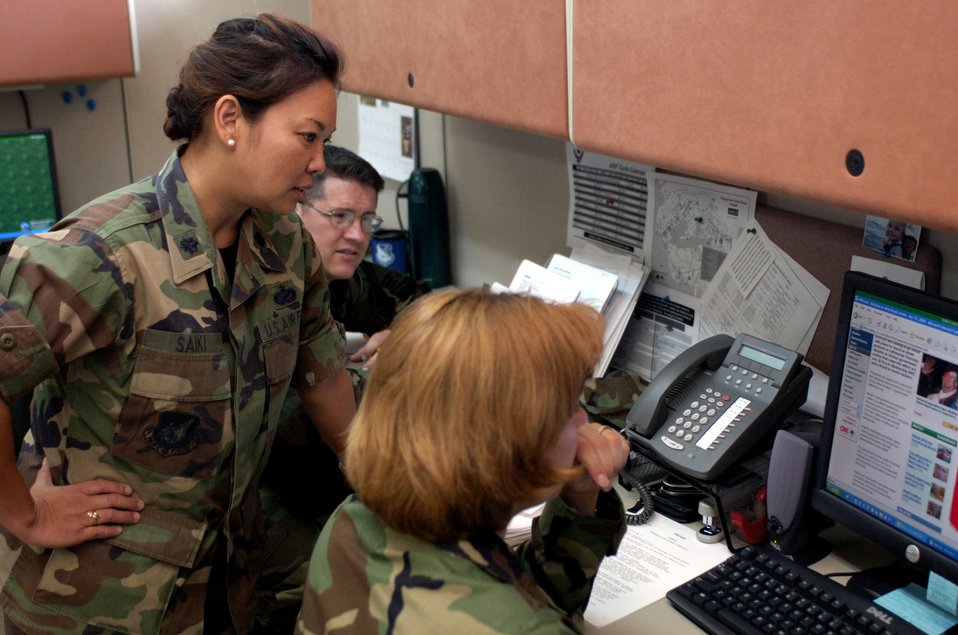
Chief PA

Lt. Col. Tracey Saiki looks over current events with Capt. Yvonne Levardi and Senior Master Sgt. Charles Ramey on Wednesday, April 19, 2006 at Kenny Warfighting Headquarters at Hickam Air Force Base, Hawaii. The Airmen are public affairs specialists for KHQ and are responsible for telling the headquarters' story through media and community relations events. They are also involved with the strategic communications key themes and messages as part of information operations.